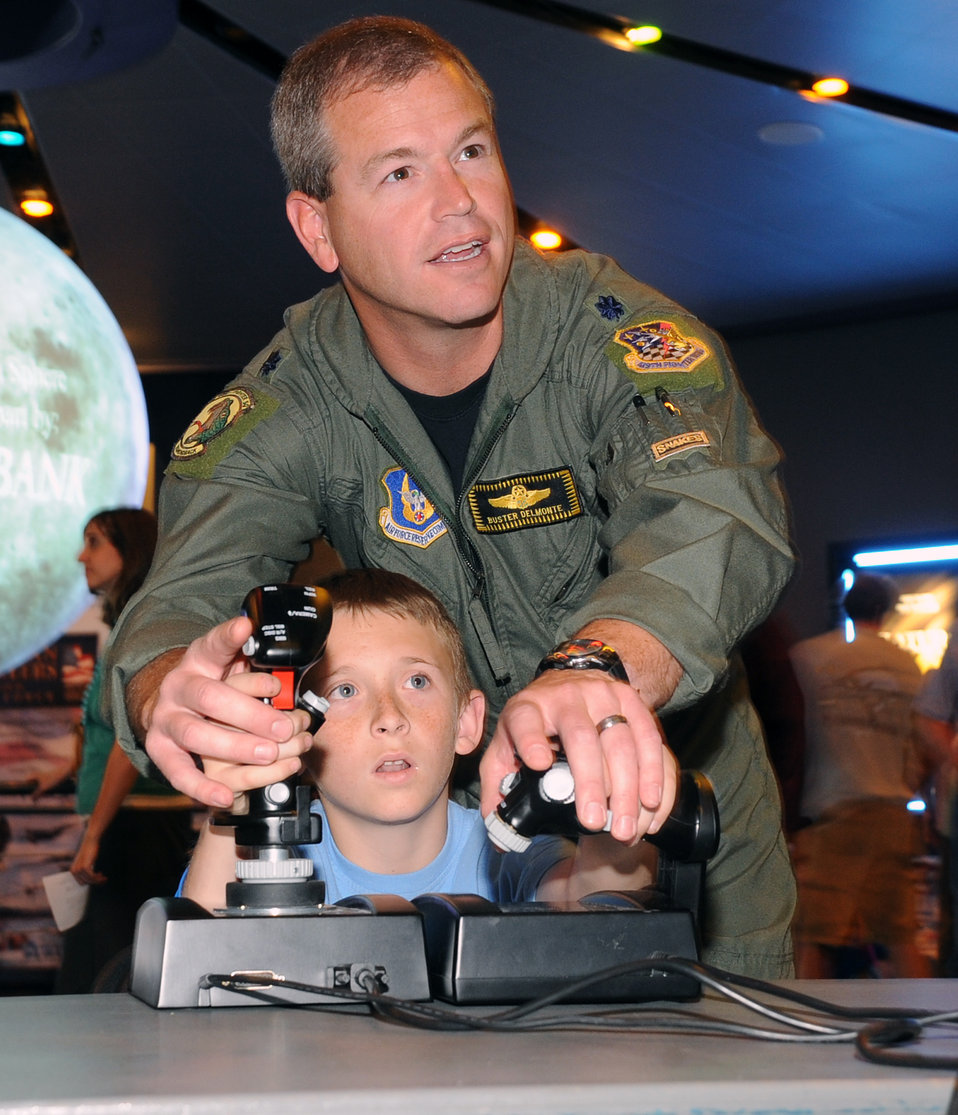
Air Force Week Salt Lake CIty

Pilot in training Cooper Hirst of Ogden, Utah, gets a little help with the controls of a flight simulator from Lt. Col. Paul